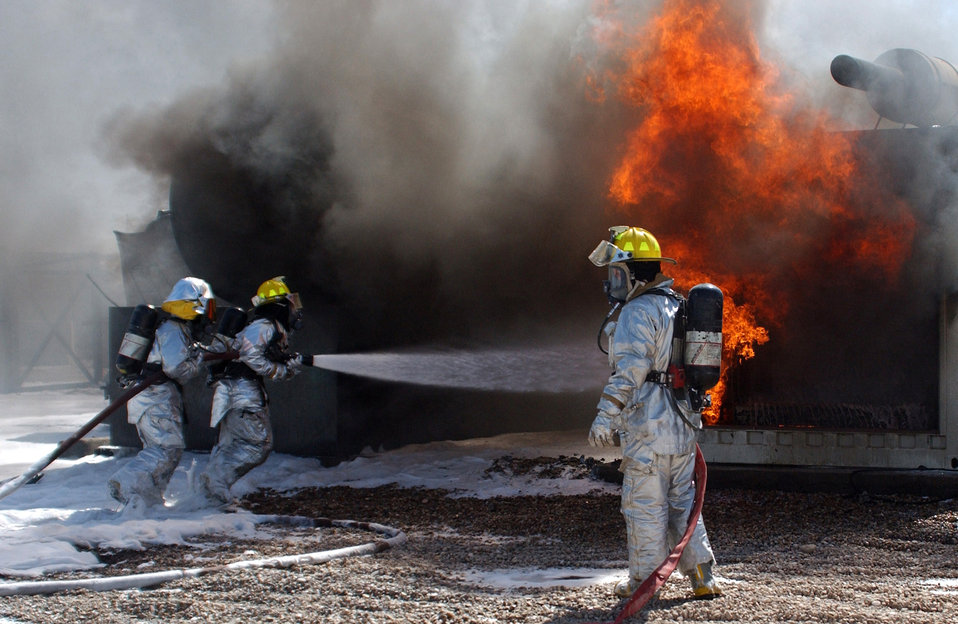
Firefighters tackle blaze

KIRKUK AIR BASE, Iraq -- Airman Dustin Steffen looks on as fellow firfighters Staff Sgt. Brian Barnes and Airman 1st Class Michael McInnis rush in to battle a blaze near the dining facility here Sept. 14. A fuel truck filling a tank made a spark that triggered the fire. The Airmen are assigned to the 506th Expeditionary Civil Engineer Squadron's fire department.